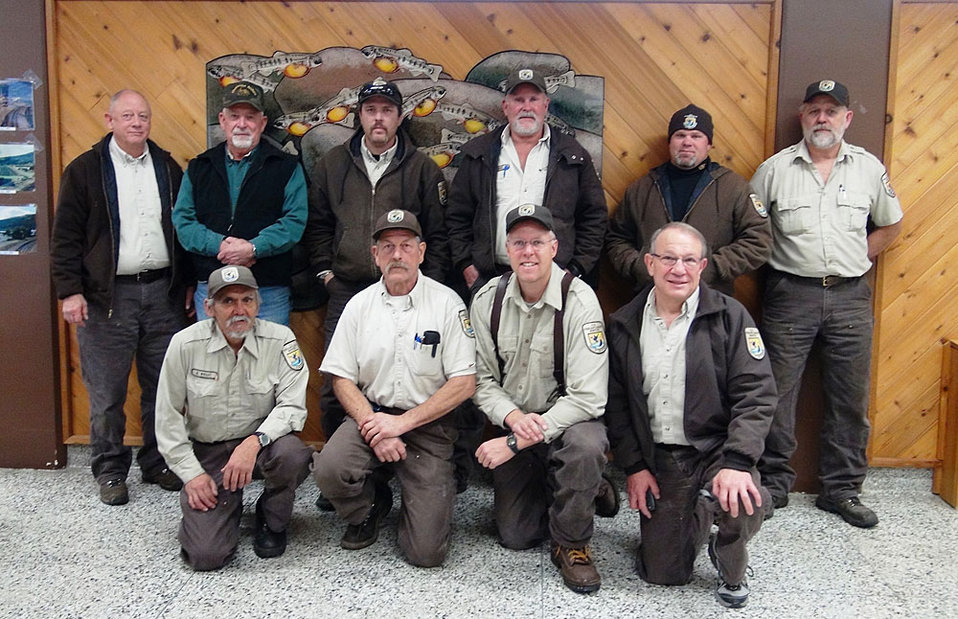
Dworshak Veterans -- Pacific Region

Veterans at Dworshak Fisheries Complex in Orofino, Idaho
Back row, left to right:Ray Jones, Hubert Simms, Jamie Henderson, Rick King, Frank Mullins, Terry Weeks.
Front, left to right: Ben Wright, Ben Green, Tom Tighe and Randy Bowen.